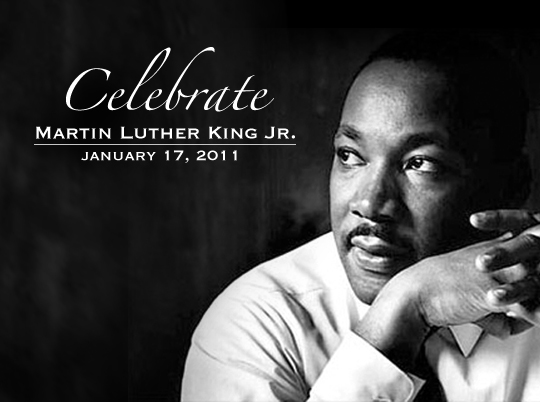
Air Force leaders commemorate Martin Luther King Jr. birthday